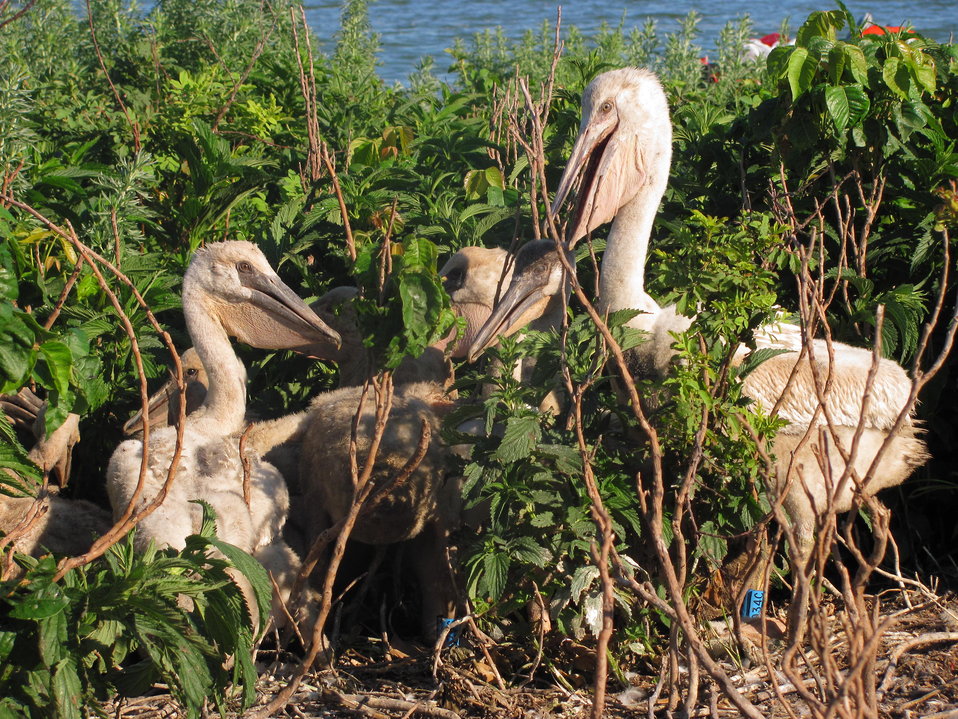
Young American White Pelicans

These young American White Pelicans were just banded at Chase Lake National Wildlife Refuge.

Location: Chase Lake National Wildlife Refuge, ND (2012)

Credit: Char Binstock / USFWS

Photo Contest Entry #97